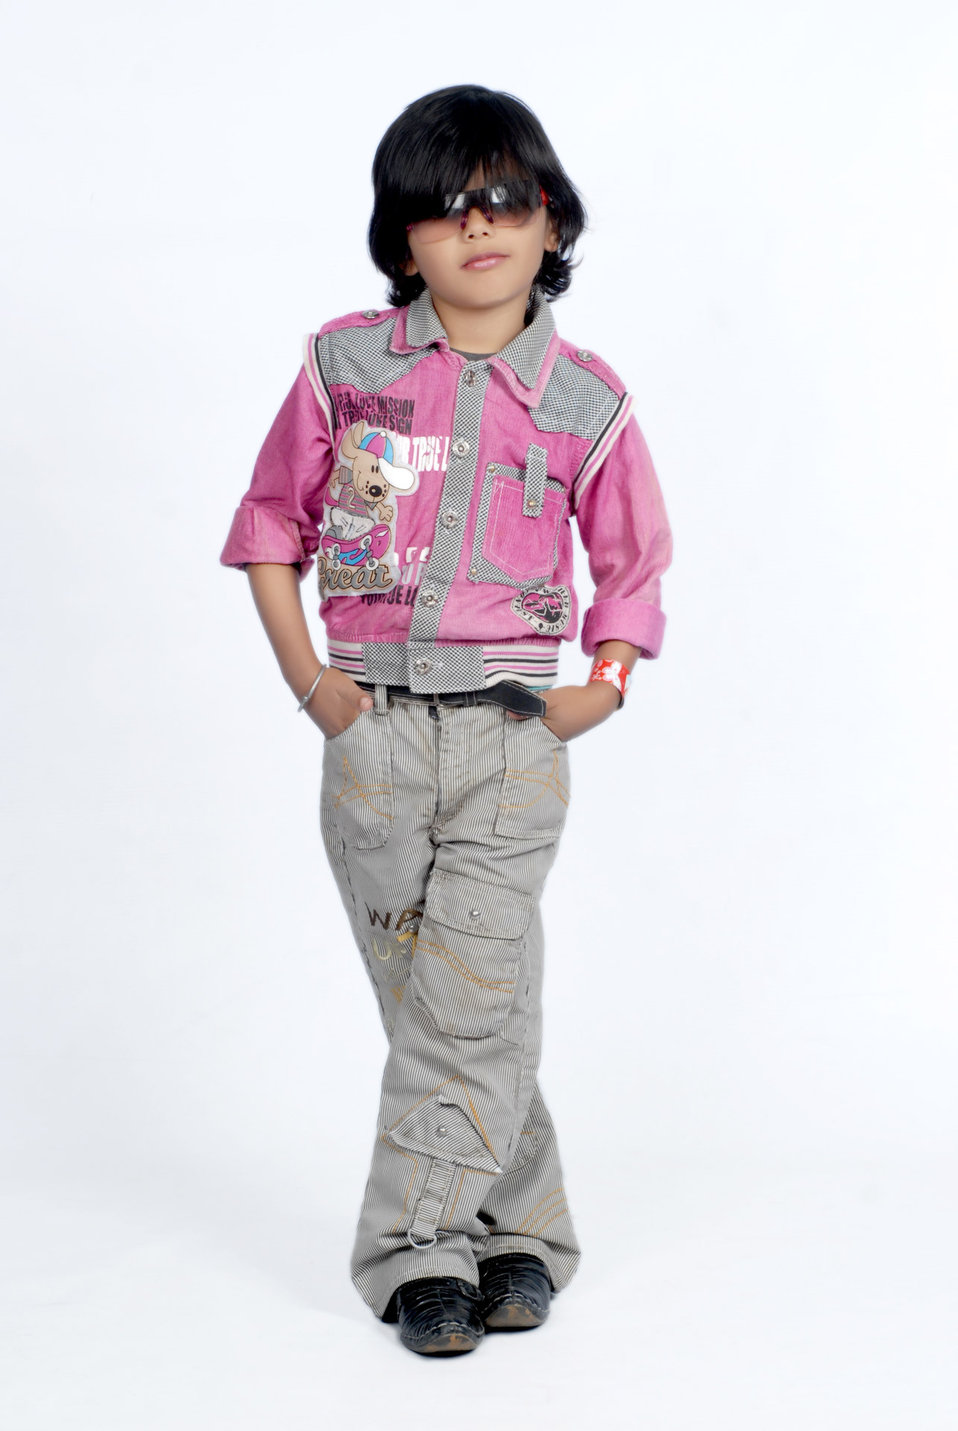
Bhauttik

Super kid model.